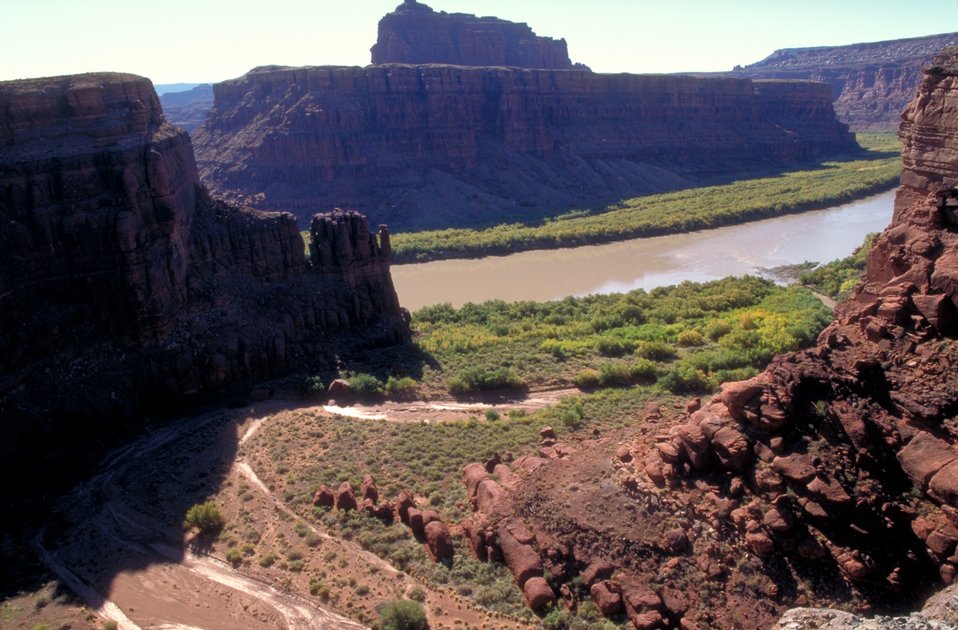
Colorado River near Moab, Utah.